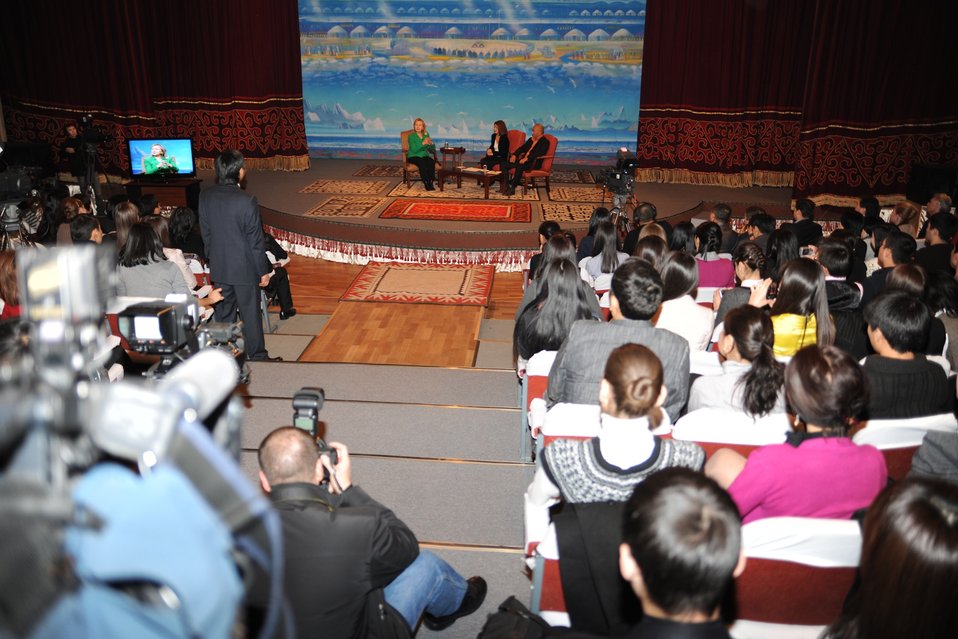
Secretary Clinton Participates in a Townterview

U.S. Secretary of State Hillary Rodham Clinton participates in a KTR studio townterview, co-sponsored by Embassy Bishkek and American University - Central Asia, in Kyrgyzstan on December 2, 2010.